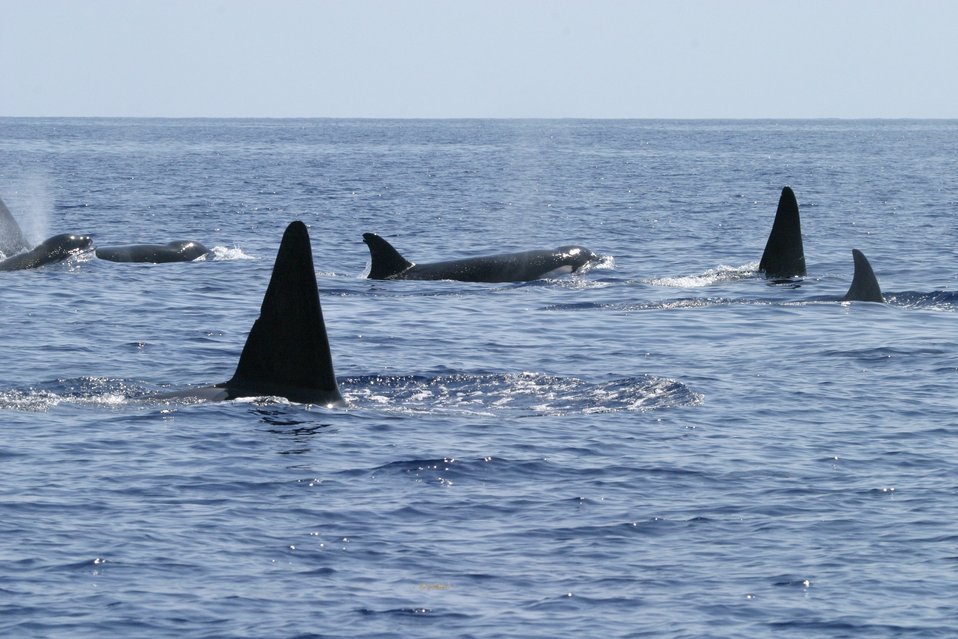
Killer whales